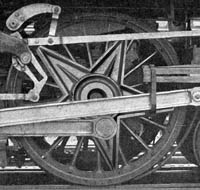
Proposal for a rail-related barnstar award. I created it using the images Walschearts valve gear.jpg and SilverBarnstar.JPG, both of which are public domain. This one is too. en:Category:Images of Wikipedia barnstars